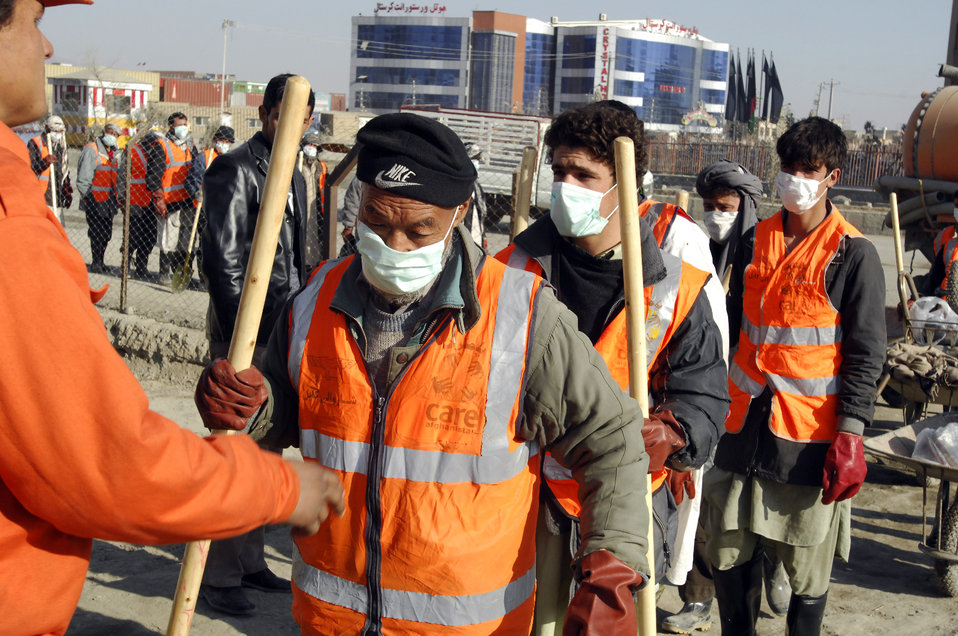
Care67